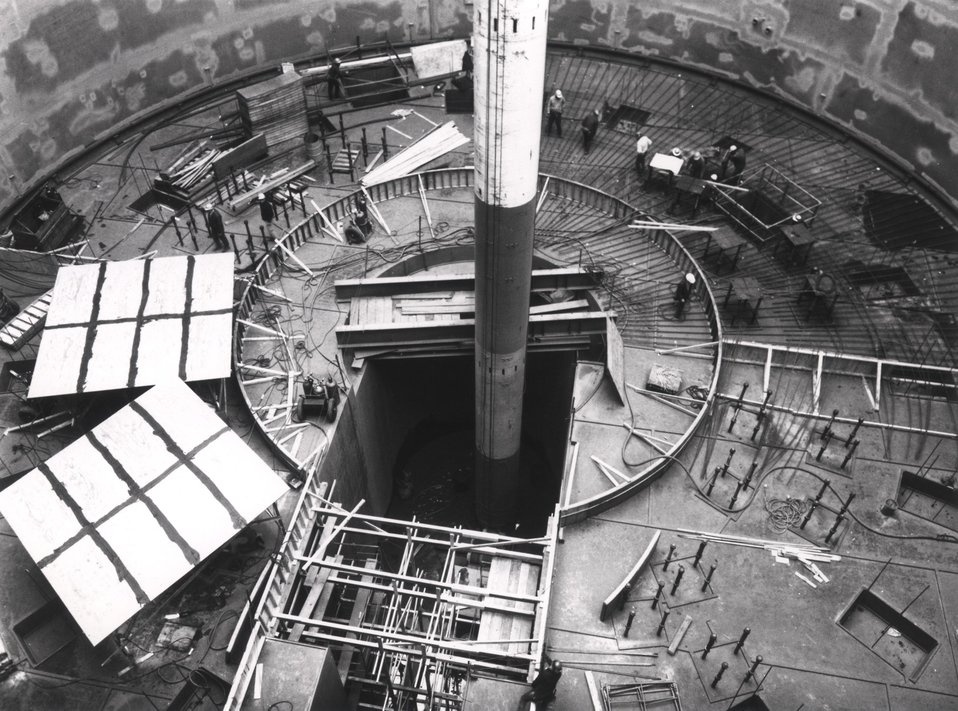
Construction of the reactor containment vessel for Unit 1 of the TVA's Sequoia Nuclear Power Plant on the Tennessee River northeast of Chattanooga, Tenn. Circa 1974.